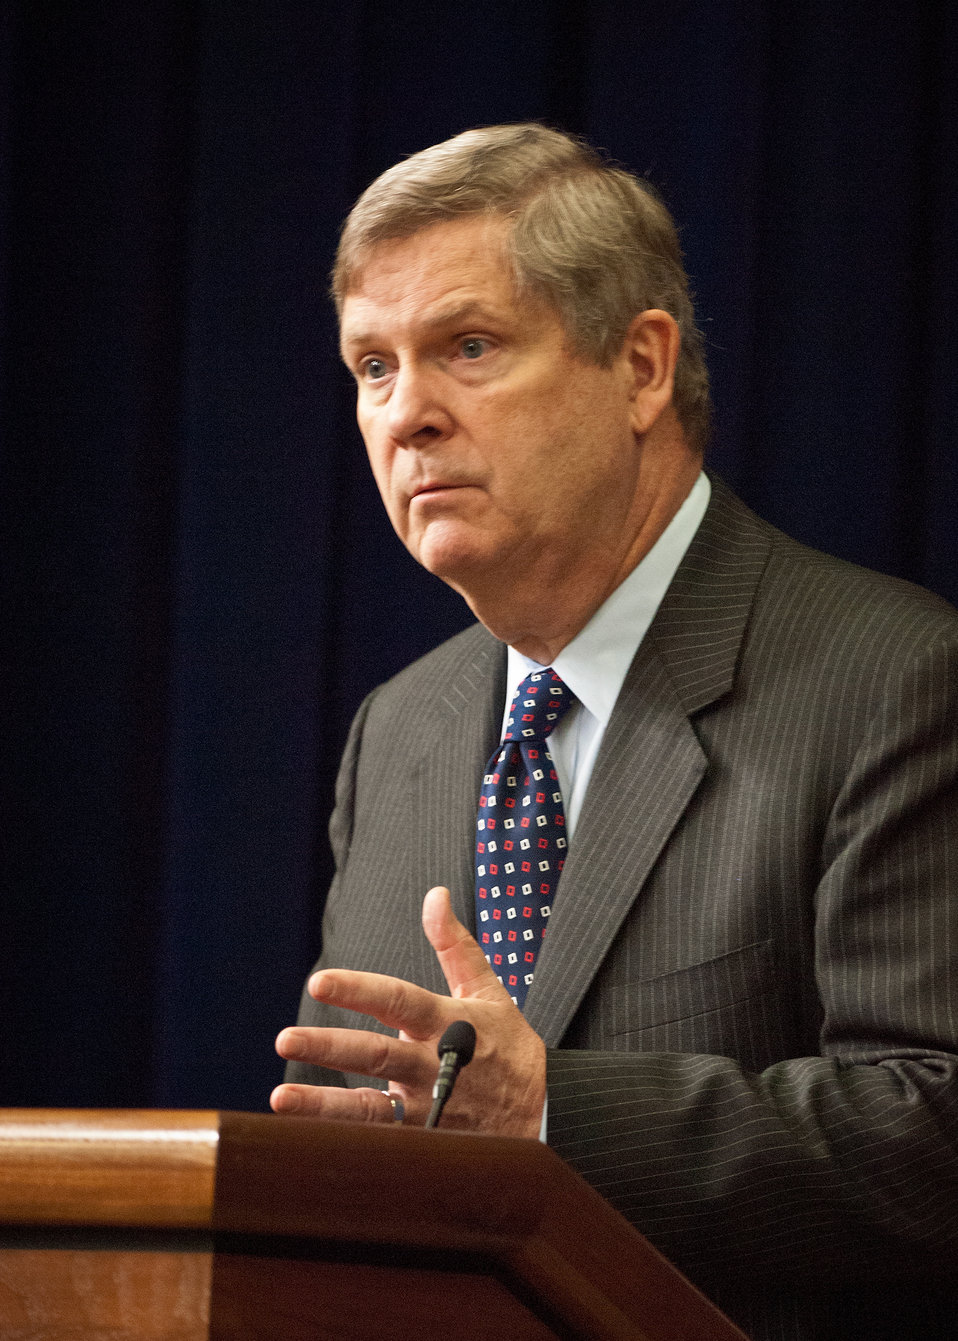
Agriculture Secretary Tom Vilsack spoke to the 11th Annual Meeting of State Agriculture and Rural Leaders about the success and future of agriculture and rural development at the Eisenhower Executive Office Building in Washington, D.C., on Friday, January 6, 2012.